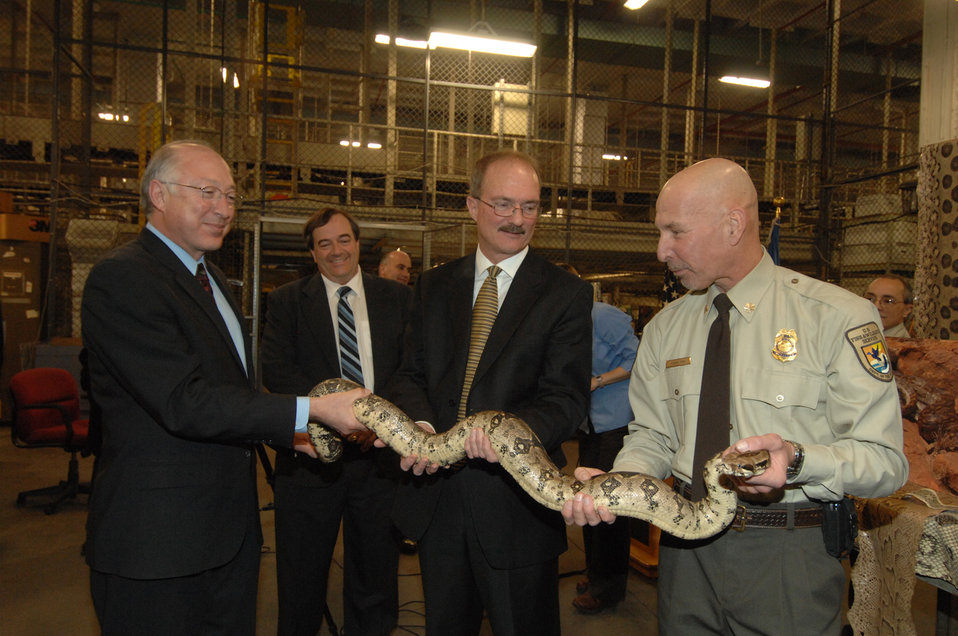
Department of the Interior employees holding a boa constrictor

On January 20, Secretary of the Interior Ken Salazar visited the Port of New York to announce that the U.S. Fish and Wildlife Service will propose to list the Burmese python and eight other large constrictor snakes that threaten the Everglades and other sensitive ecosystems as “injurious wildlife” under the Lacey Act.